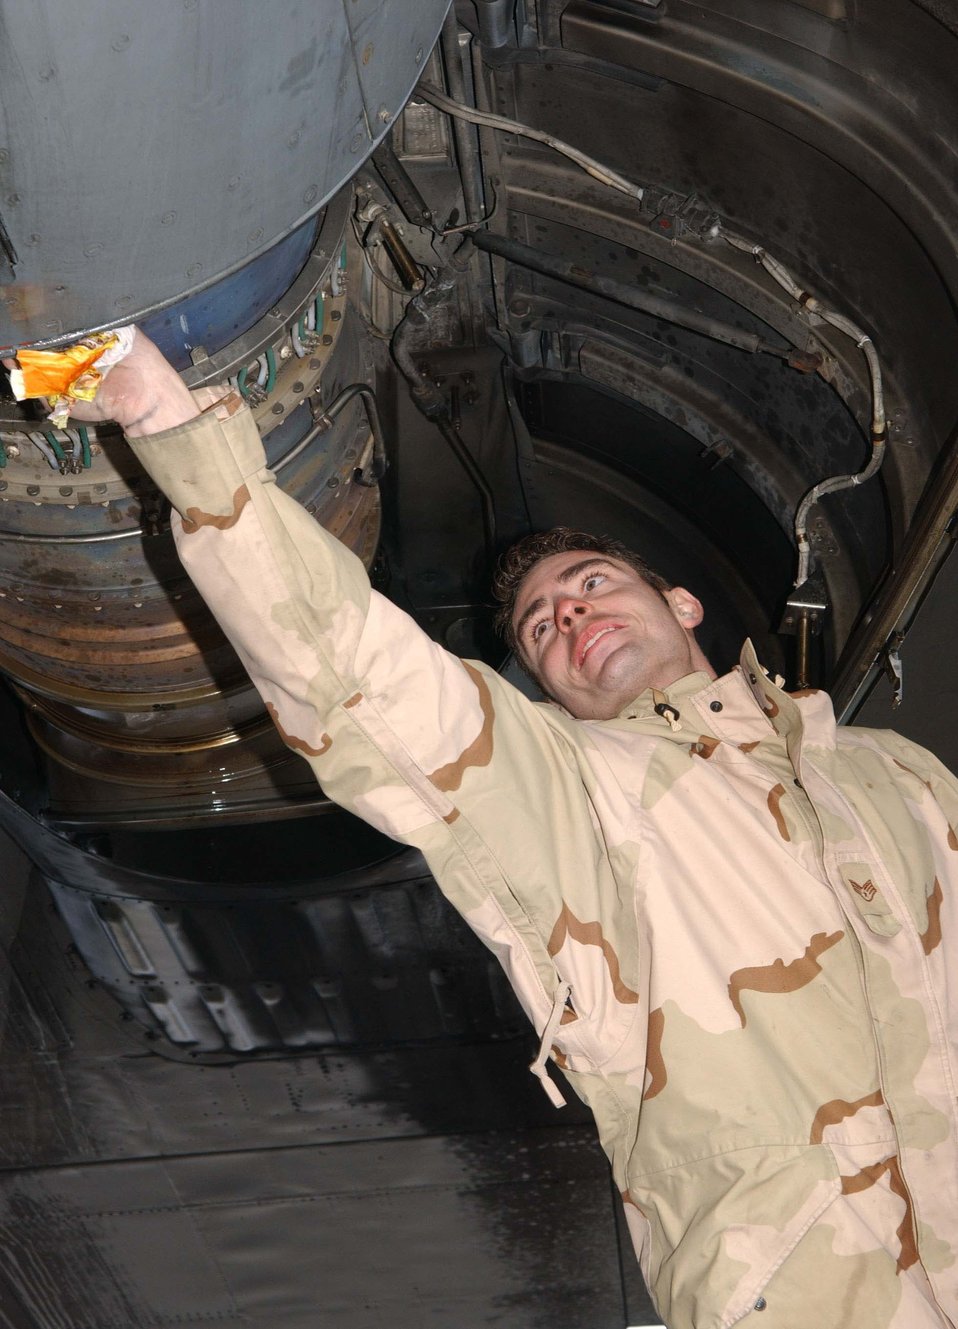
Expeditionary logistics team carries the load

BAGRAM AIR BASE, Afghanistan -- Staff Sgt. Robert King works on the engine of a C-130 Hercules to make sure the aircraft is airworthy. Sergeant King is assigned to the 455th Expeditionary Logistics Readiness Squadron's transient alert function here, deployed from McChord Air Force Base, Wash.